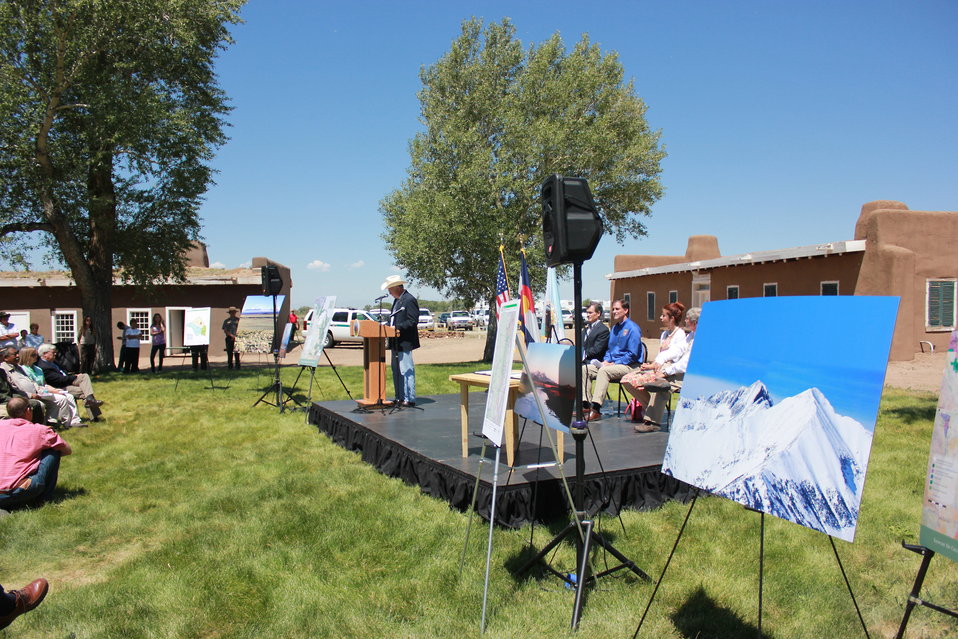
Historic Conservation Easement in Sangre de Cristo Mountains